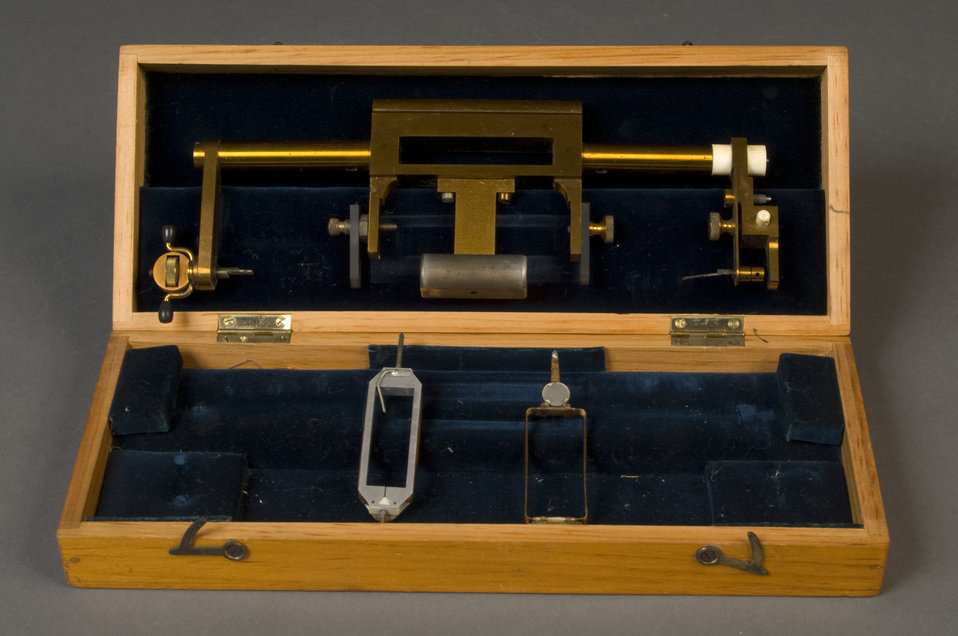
Metal Instrument in Case